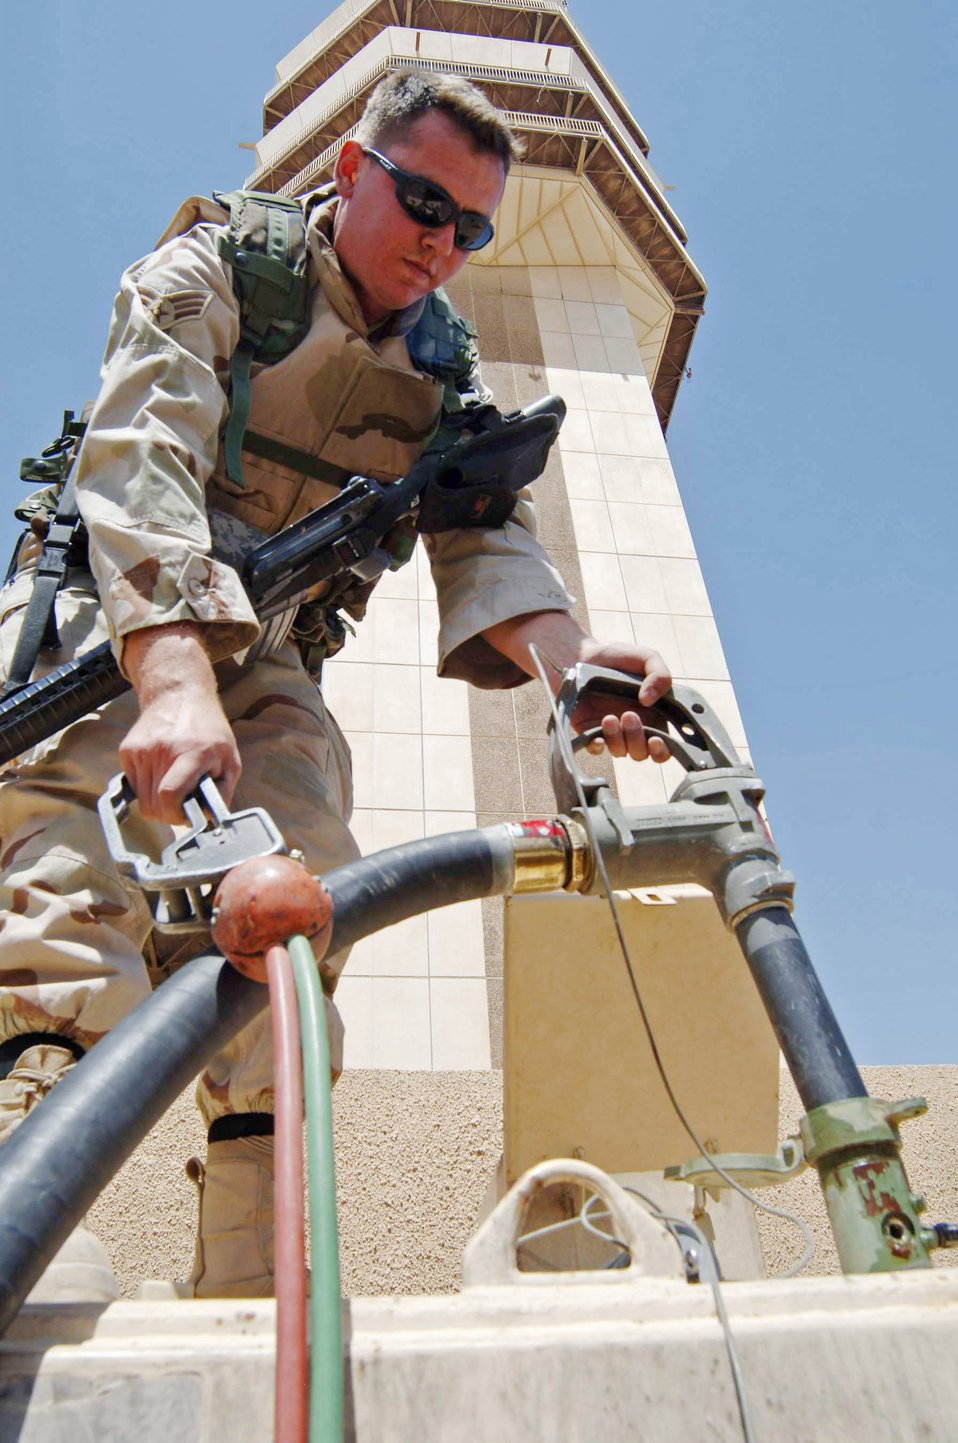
Baghdad POL trains Iraqis on fuel delivery

Senior Airman Chris Macfadden, a fuel distribution technician, pumps JP-8 fuel June 14 into a generator tank at Sather Air Base, Iraq. Airman Macfadden is assigned to the 447th Expeditionary Logistics Readiness Squadron.